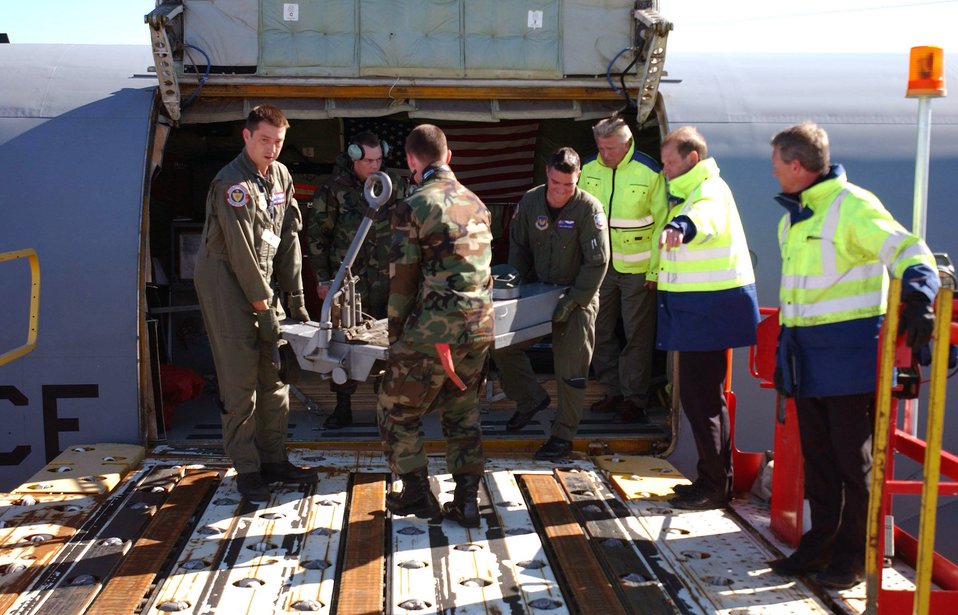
Northern Viking tests command, control capabilities

Members of the 100th Air Refueling Wing unload an aircraft jack from a KC-135 Stratotanker in preparation for Northern Viking 2007 Aug. 13 at Keflavik Airport, Iceland. Thirteen aircraft and one patrol frigate from six nations are participating in the exercise.